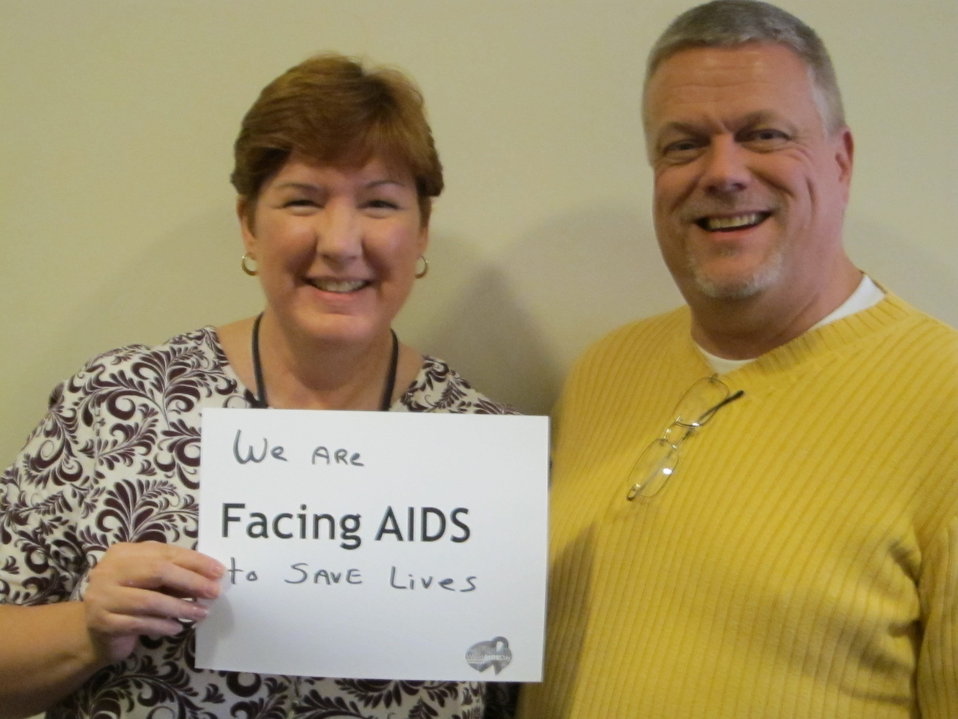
We are Facing AIDS to save lives